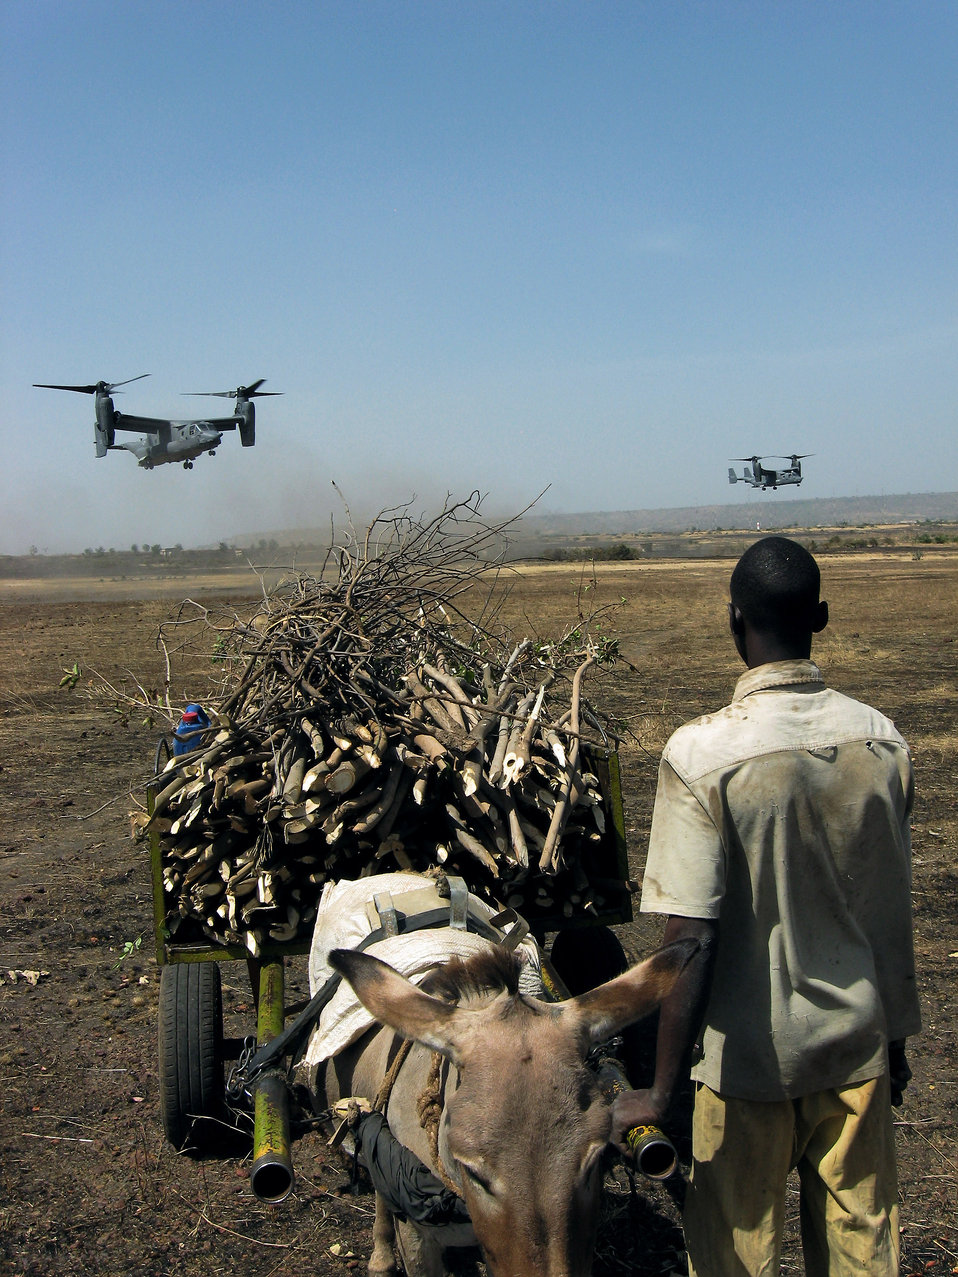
CV-22s complete first operational deployment

A Malian boy stops to watch incoming CV-22 Ospreys carrying Malian and Senegalese troops during an exercise near Bamako, Mali. U.S. Special Operations forces the worked with African and European partner nations in the effort to build bonds of trust and confidence.